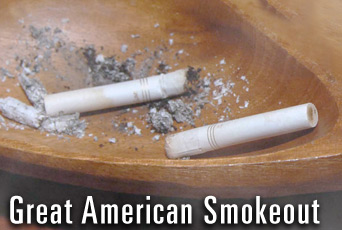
Great American Smokeout

Smokers around the world will attempt to kick their habit during the 2006 Great American Smokeout Nov. 16.